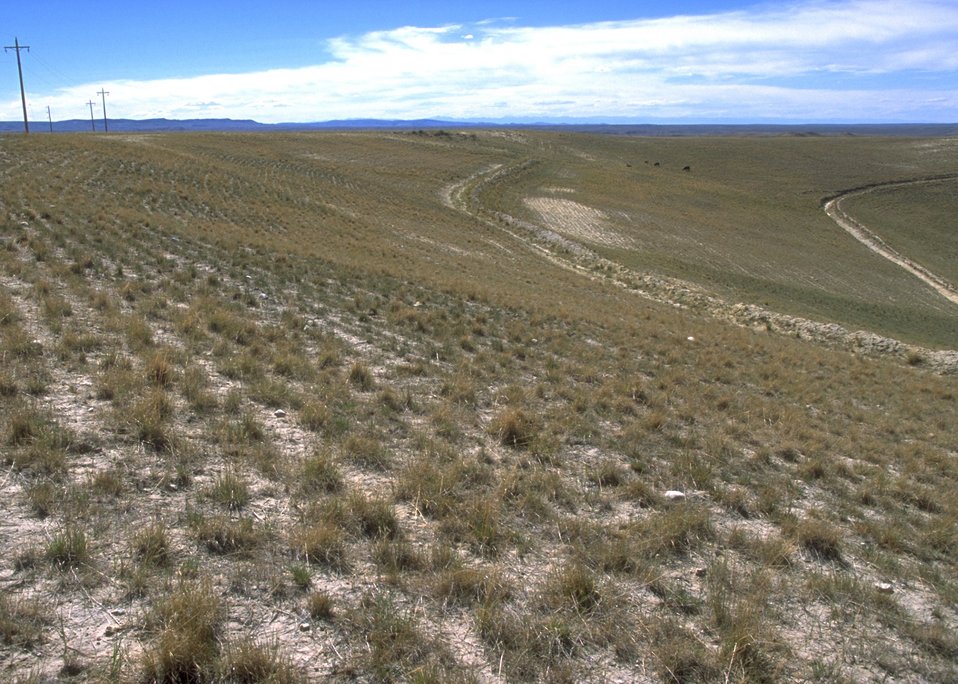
Gas Hill Abandoned Mine Lands in various stages of rehabilitation, Lander Field Office.